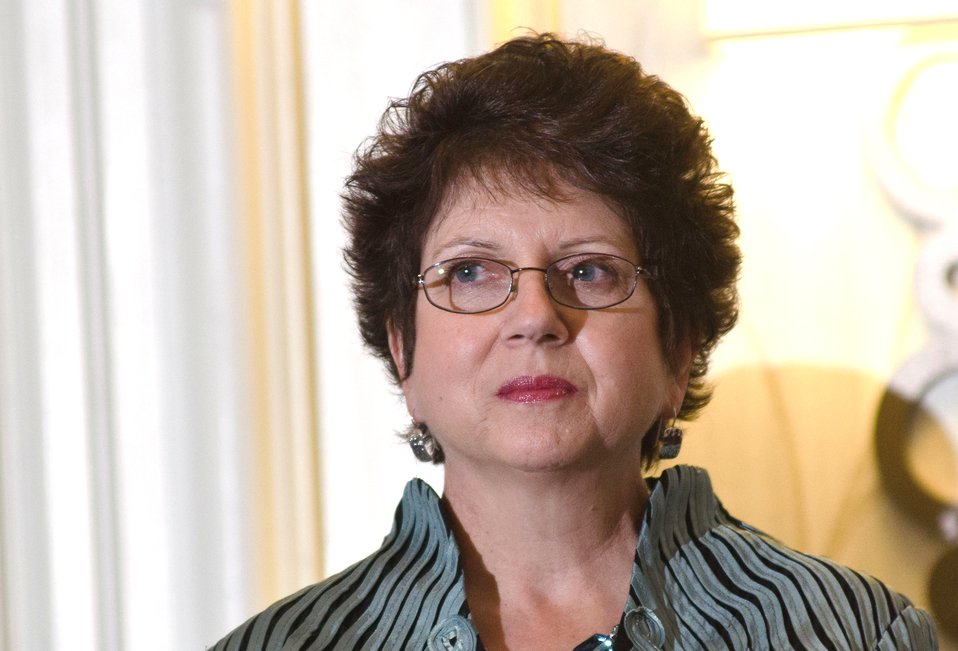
Rutgers New Jersey Agricultural Experiment Station Cooperative Extension of Ocean County Family & Community Health Sciences Educator Joanne Kinsey discussed the use of social media tools to extend and enhance programmatic efforts in nutrition education and practices at the 2013 Agricultural Outlook Forum, held at the Crystal Gateway Marriott Hotel, Arlington, Virginia on Thursday, Feb. 21, 2013. This annual Forum brings together producers, policymakers, business, government, and industry leaders to meet, exchange ideas, and discuss timely agriculture issues.